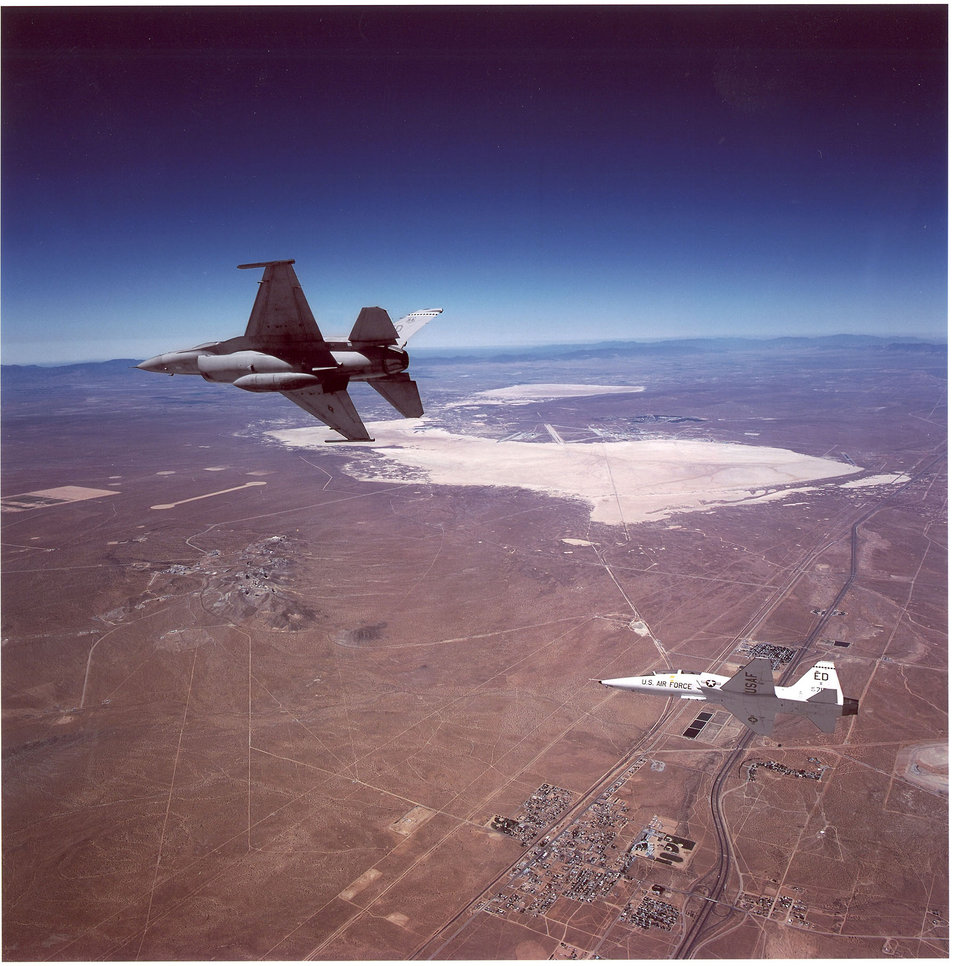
Modern day Edwards AFB, Calif.

A F-16 Fighting Falcon and T-38 Talon fly a proficiency mission with a bird's eye view of Edwards Air Force Base, Calif., including Rogers and Rosamond Dry Lakes.